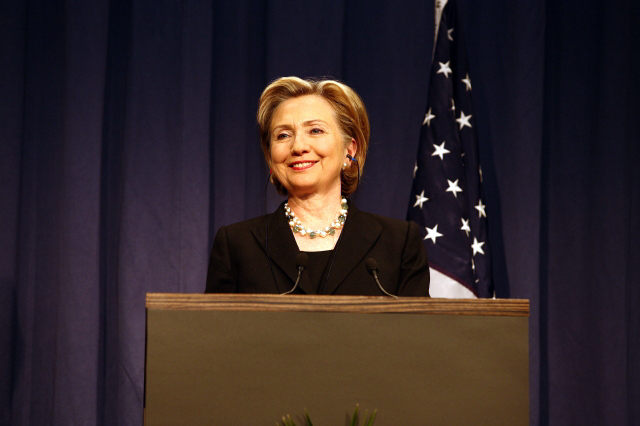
Press Conference With Russian Foreign Minister

Press conference after dinner meeting between U.S. Secretary of State Hillary Rodham Clinton and Russian Foreign Minister Sergey Lavrov in Geneva, Switzerland March 6, 2009.